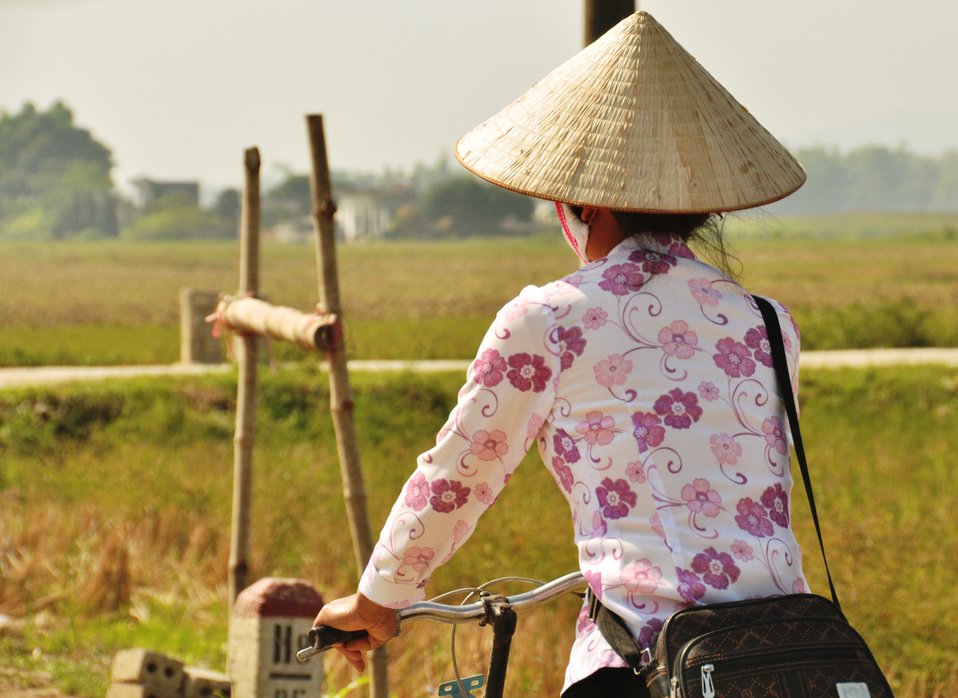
A woman rides her bike near Dien Bien, Vietnam